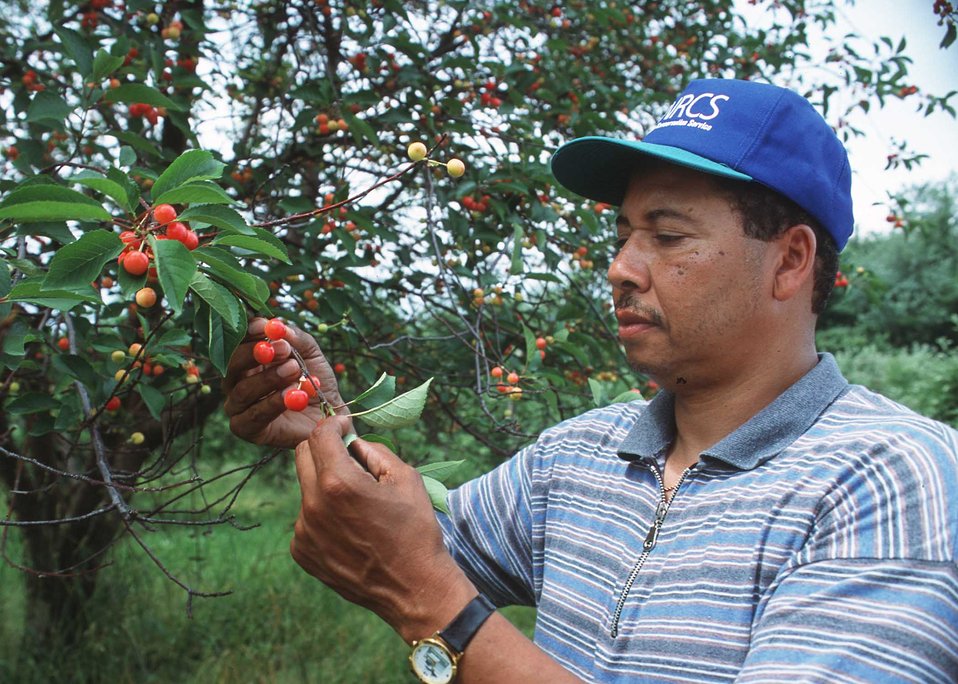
Resource Conservationist Bruce Green examines a cherry tree for pests. VanBuren County, Michigan.